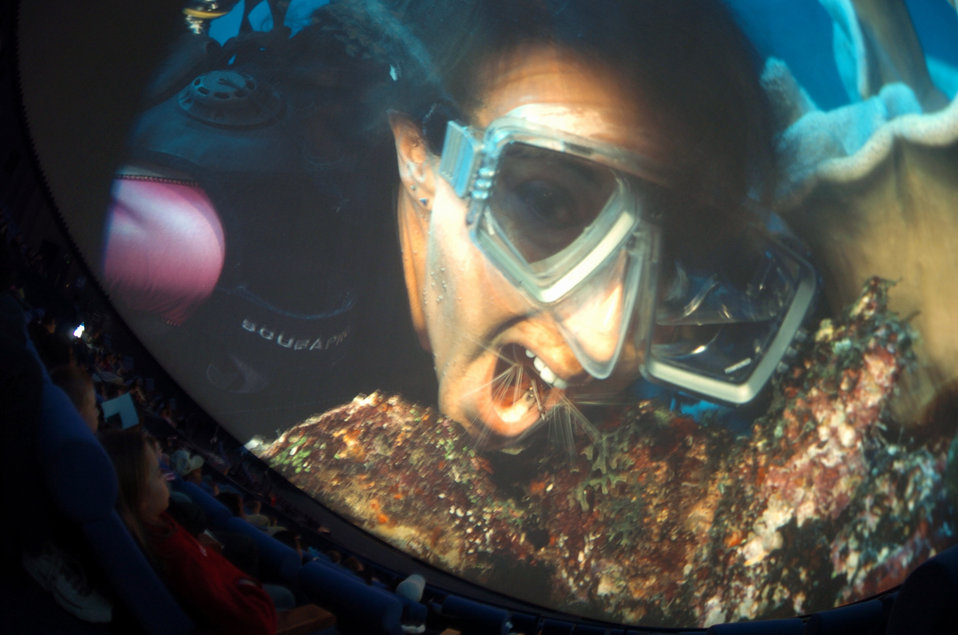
To the moon!

TOKYO -- Fifth-grade students from nearby Yokota Air Base watch an educational film on a widescreen about the world's coral reefs during a field trip to Tamarokuto Science Center here Feb. 3. The center offers a wide variety of exhibitions about the sciences of living environment, earth, life, body and space.